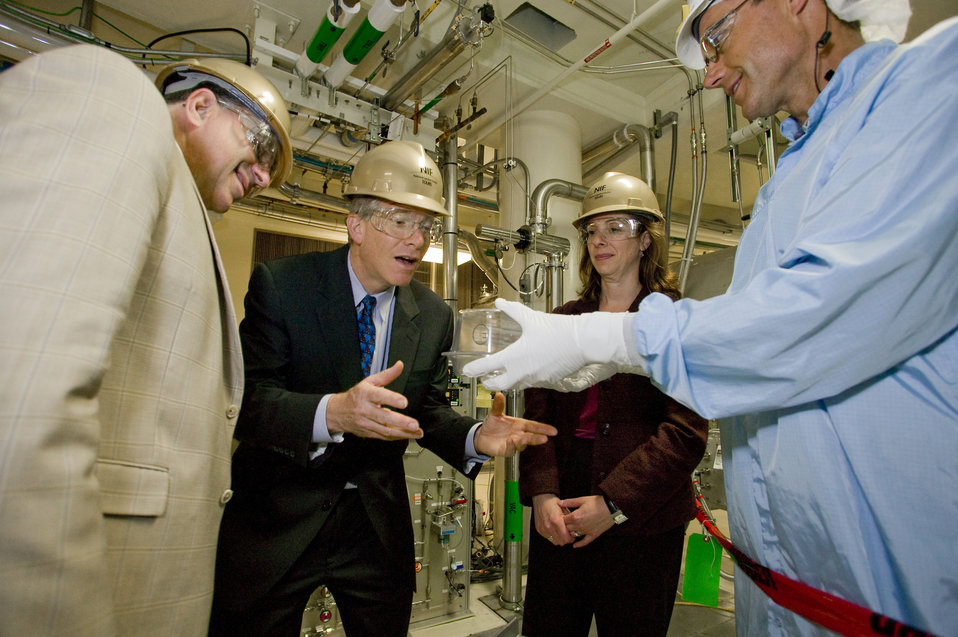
From left: Ed Moses; Deputy Energy Secretary Daniel Poneman; Julie
Levin, California Energy Commission; and David Drummer, who shows one of
the actual NIF targets.